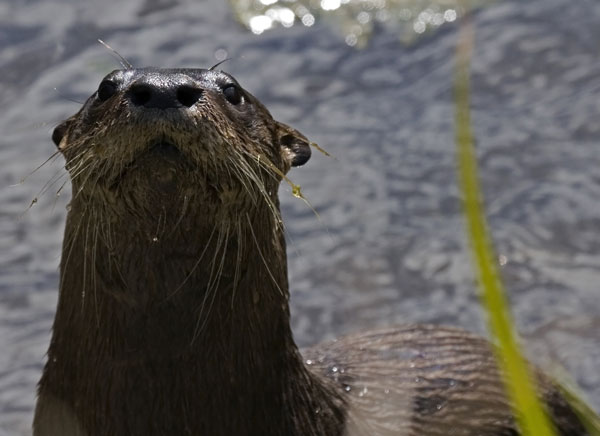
river otter

Arthur R. Marshall Loxahatchee National Wiildlife Refuge, FL